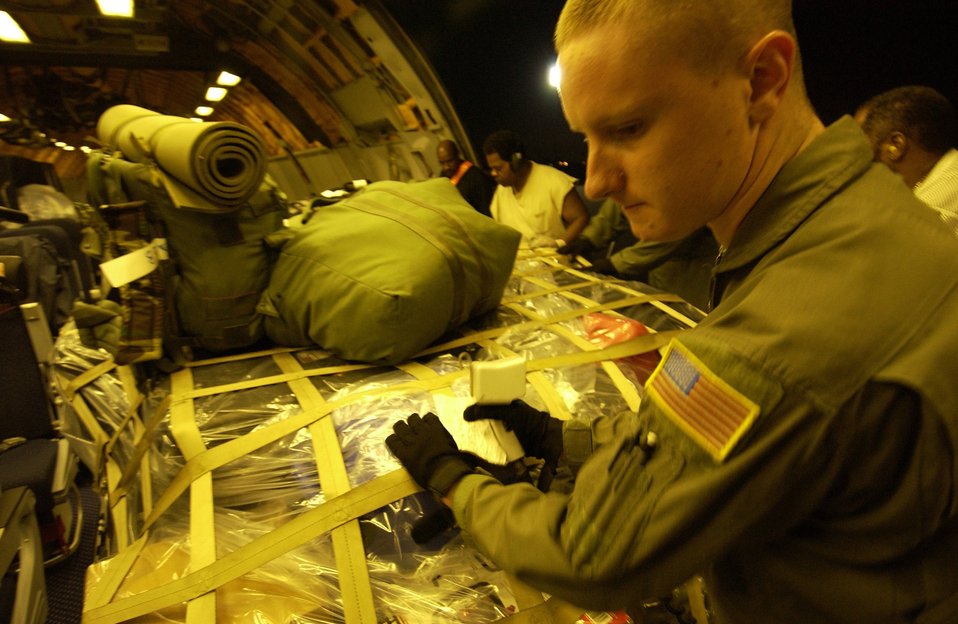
Pakistan Earthquake Relief

LANGLEY AIR FORCE BASE, Va. -- An Airman loads a KC-10 Extender with relief supplies here Oct. 11. The Air Force is delivering disaster relief supplies and services as part of a multinational effort to provide aid and support to Pakistan and parts of India and Afghanistan following a devastating earthquake. The KC-10 is from McGuire Air Force Base, N.J.